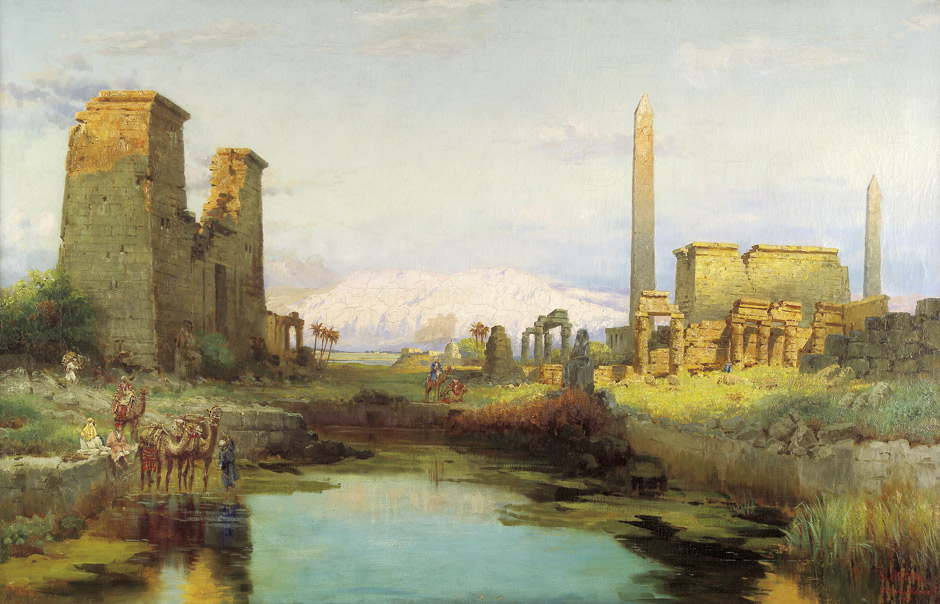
Morgenstimmung am heiligen See von Karnak. Öl auf Leinwand. 111 x 163 cm. Unten rechts signiert, datiert und betitelt 'C. Wuttke. Luksor-Karnak 1911'.